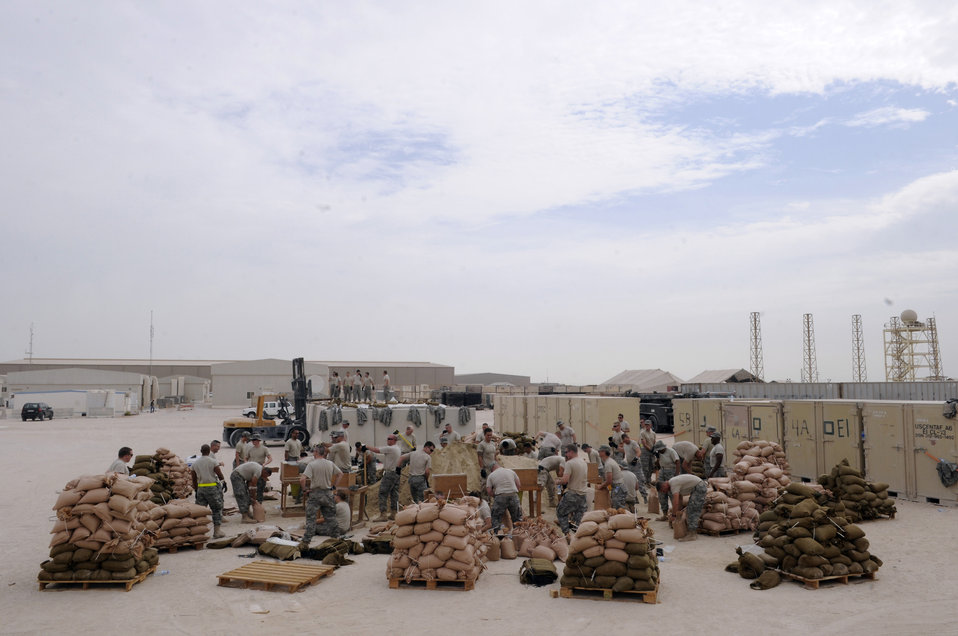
Working in the sand

Airmen from the 379th Expeditionary Communications Squadron fill sandbags Nov. 4 at an air base in Southwest Asia. The sandbags will be used to fortify emergency bunkers. The Airmen are deployed here in support of operations Iraqi Freedom and Enduring Freedom and Joint Task Force-Horn of Africa.